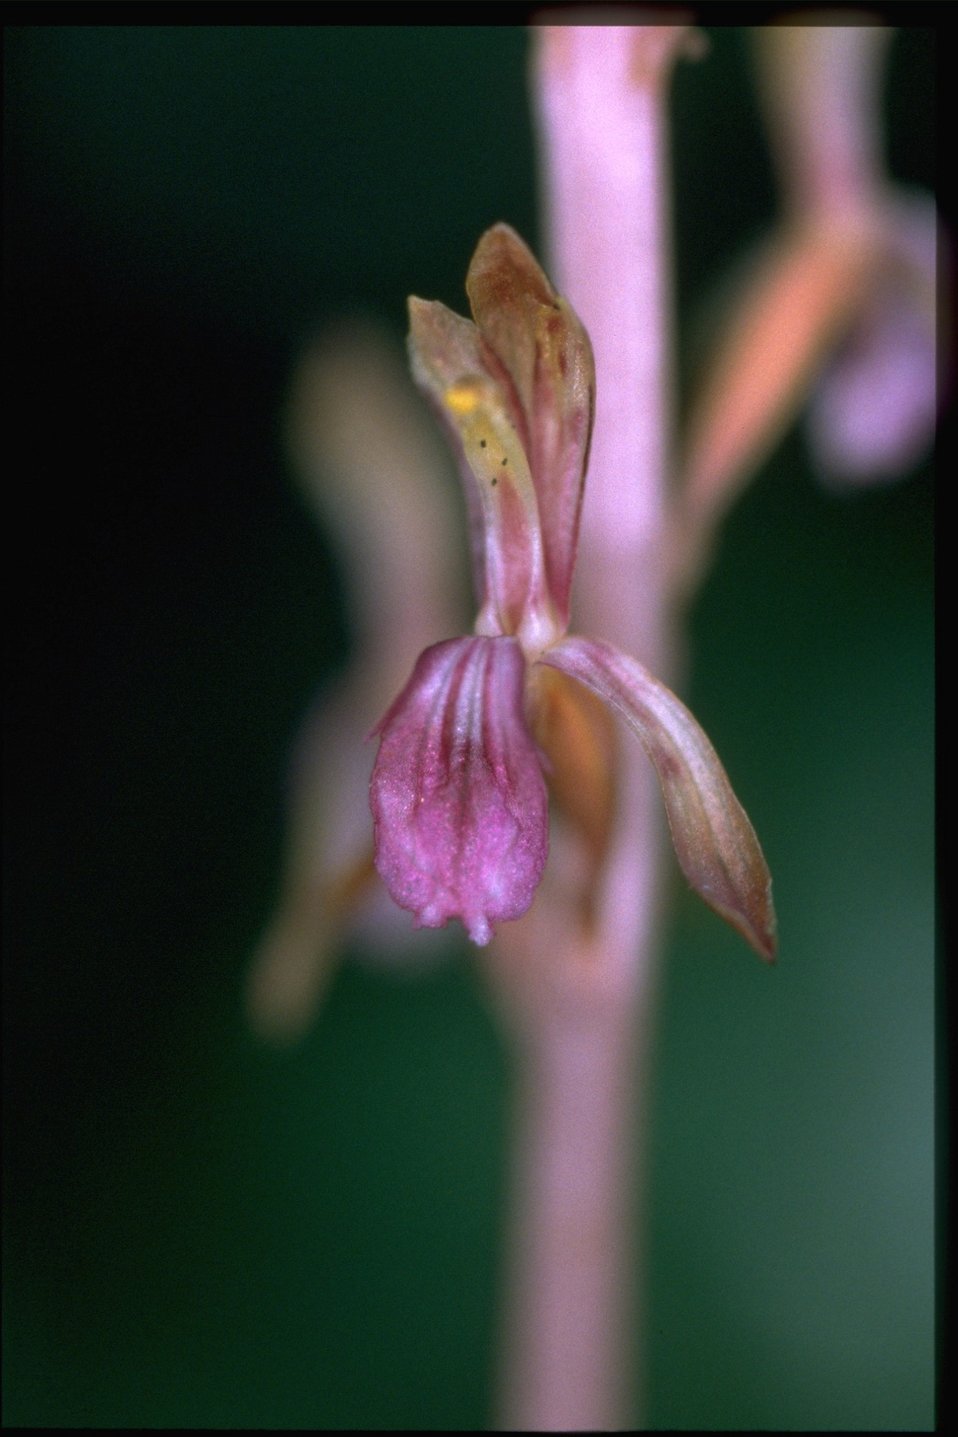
Closeup shot of Corallorhiza maculata.